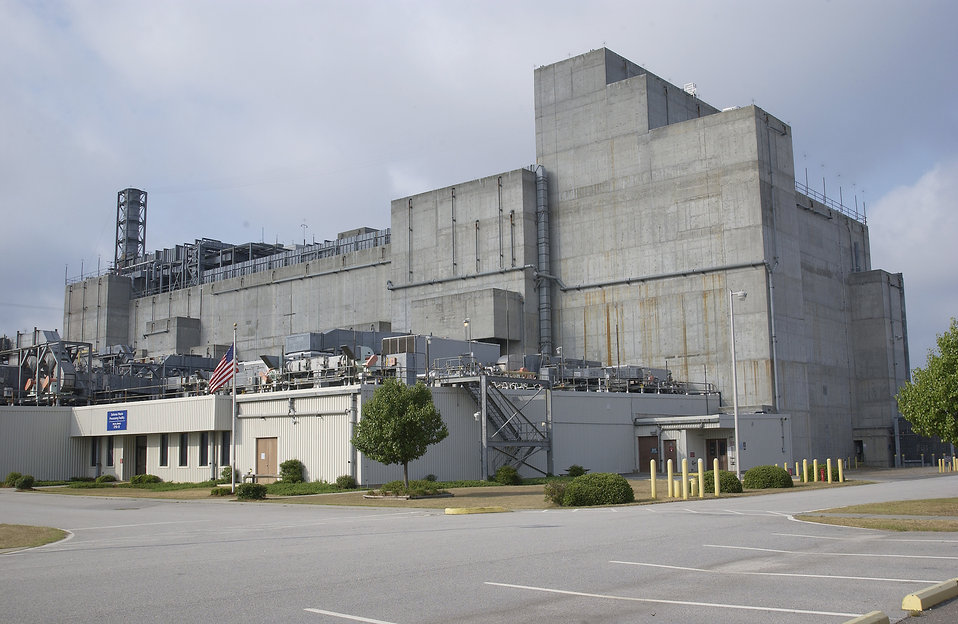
SRS - Defense Waste Processing Facility

The Defense Waste Processing Facility set a record by producing 267 canisters filled with glassified waste in a year. New bubbler technology and other enhancements will increase canister production in the future.